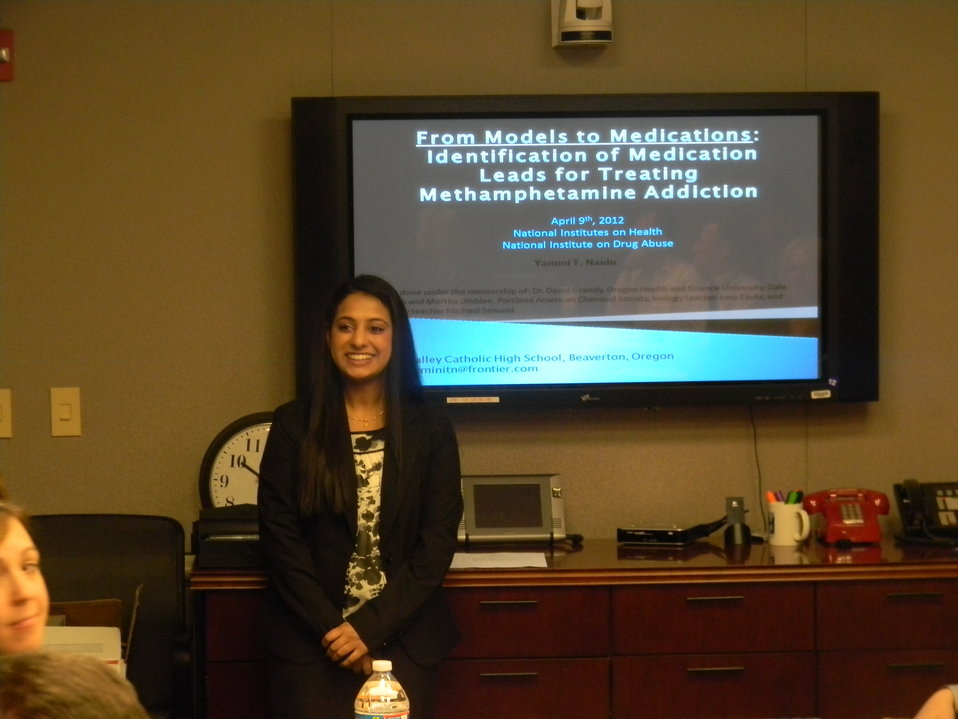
Yamini Naidu presents at NIDA2

Yamini Naidu, 3rd place winner of the 2011 Addiction Science Awards, presents her study to NIDA staff